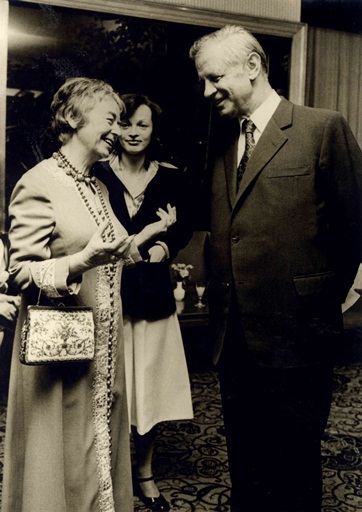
עברית: rachelceglaberlinexb